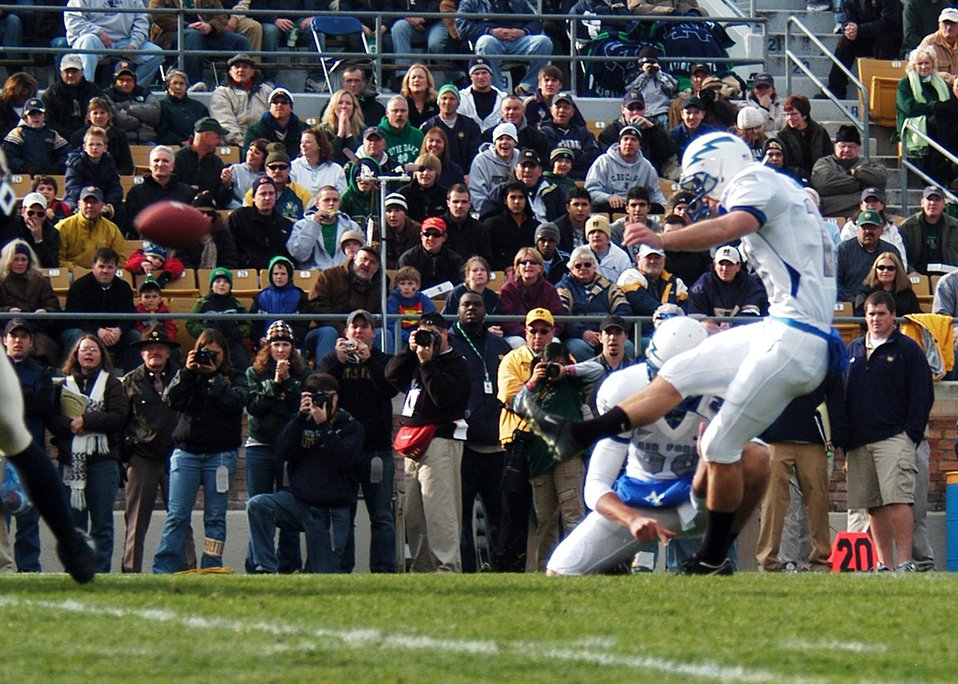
Football: Falcons outfight Irish, 41-24

U.S. Air Force Academy Falcon kicker Ryan Harrison boots out of the hold of Brandon Geyer as sideline photographers get the shot during Air Force's 41-24 victory over the Fighting Irish Nov. 10 at Notre Dame Stadium in Indiana. Harrison accounted for 11 points on two field goals and five points after touchdown.